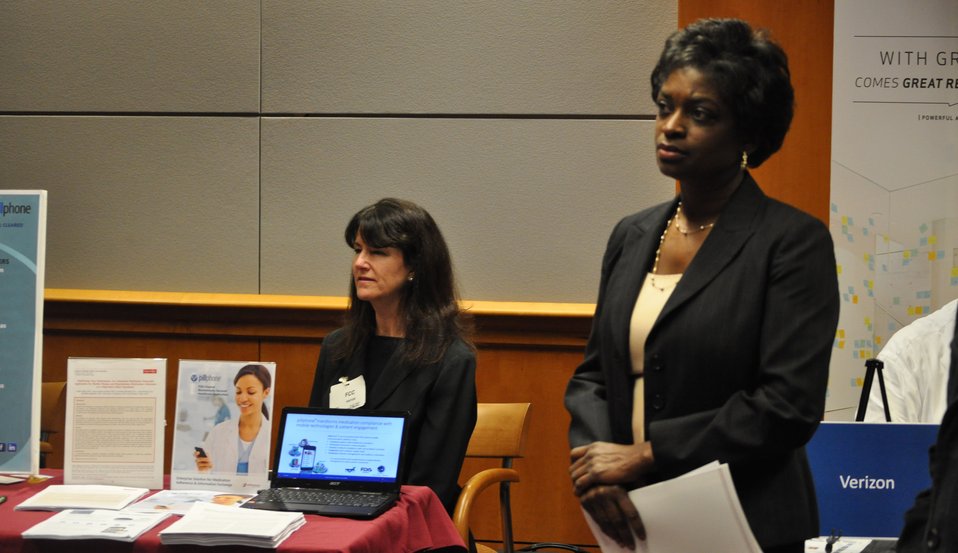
12.6.13 mHealth Innovation Expo

FCC mHealth Innovation Expo.